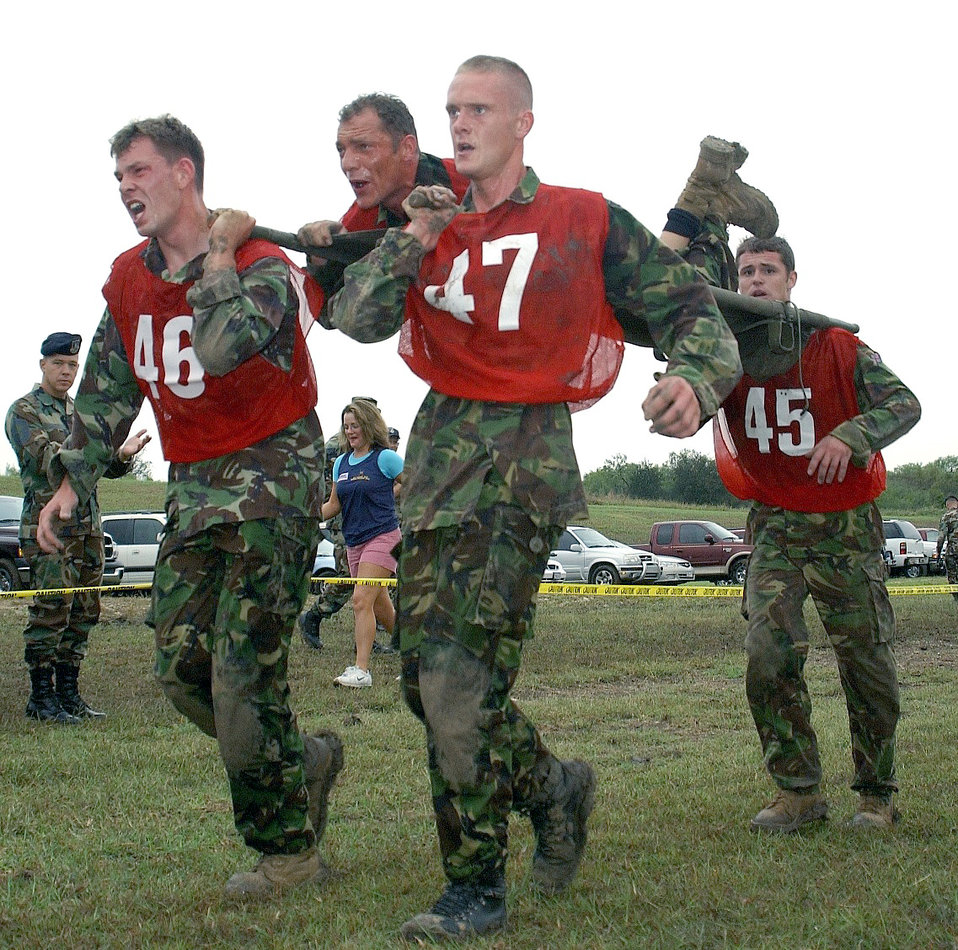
Defender Challenge

LACKLAND AIR FORCE BASE, Texas -- Royal Air Force Regiment Sgt. Andrew Henderson, on litter, encourages his teammates during the Defender Challenge 2004 fitness challenge event. Carrying Sergeant Henderson are, from left, Cpl. Duncan Slater, Cpl. Leigh Hobson and Senior Aircraftsman Gavin Ryder. The annual Defender Challenge pits security forces teams from Air Force major commands, the RAFR and the Department of Energy against each other in events that test marksmanship, tactics, physical fitness and teamwork. This year's competition runs Oct. 23 to 28.